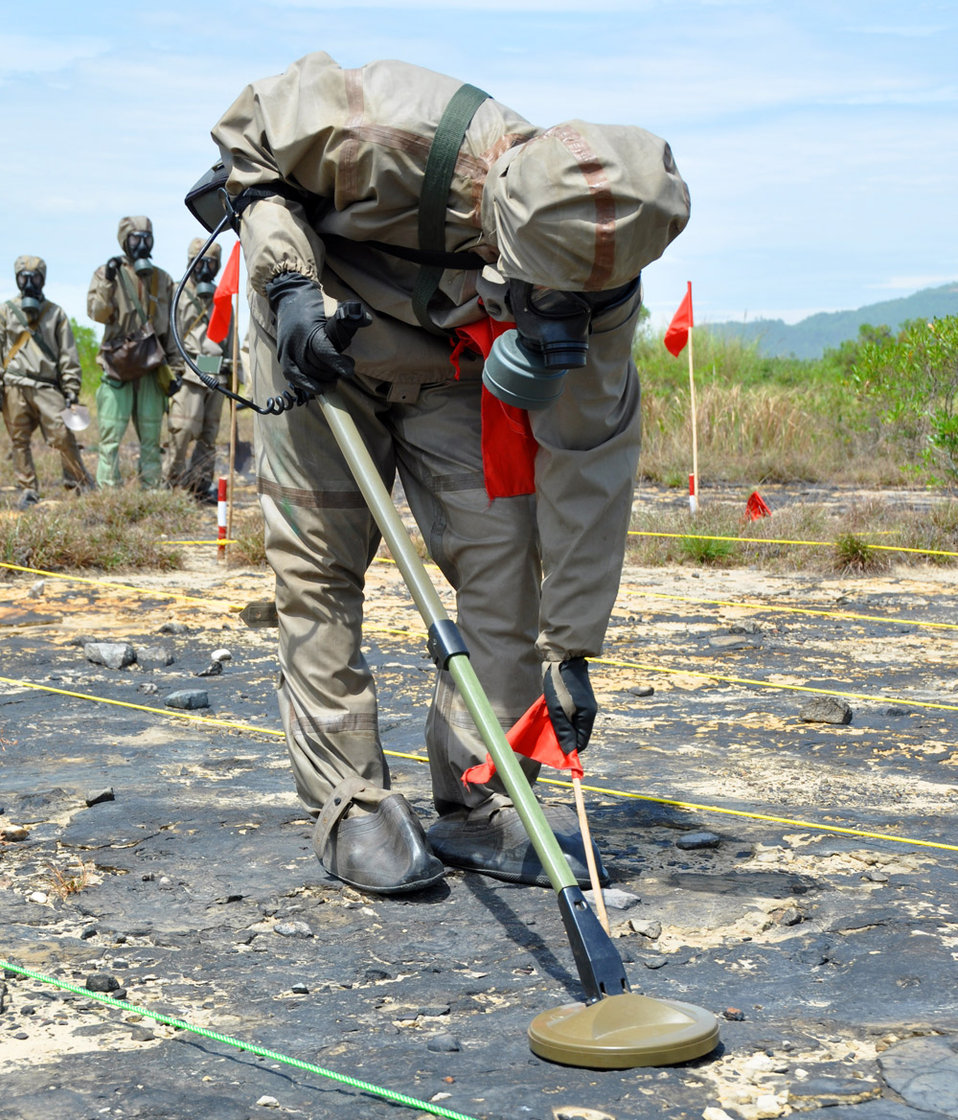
A Vietnamese soldier demonstrates UXO detection and clearance in Danang. June 17, 2011